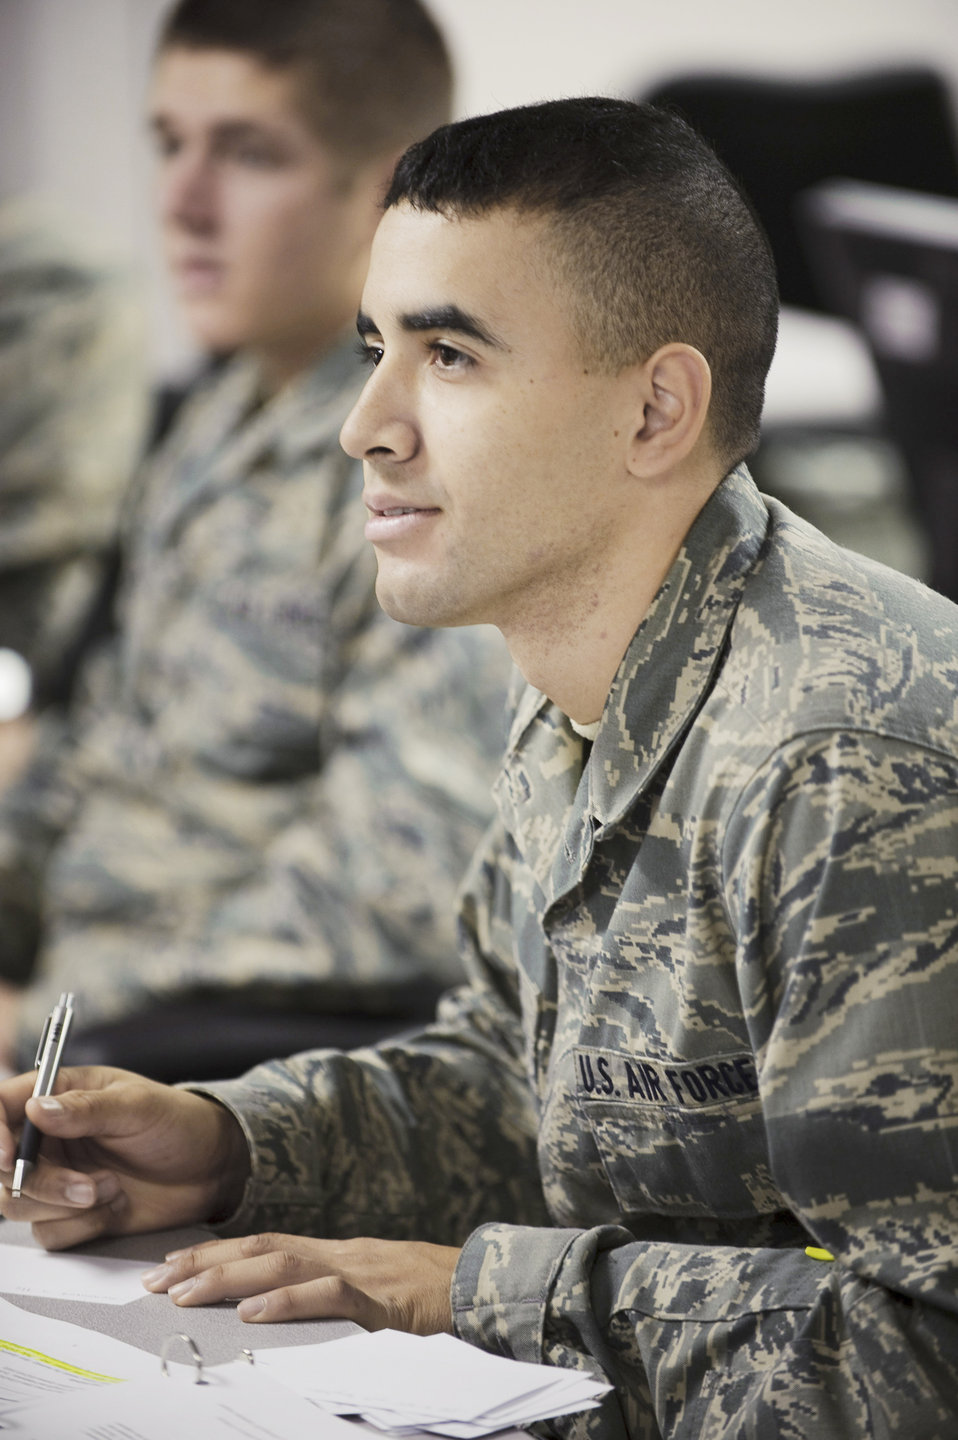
First group of BMT graduates begin sensor operator technical school

Airman Basic Luis Zayas listens during a review of the previous day's lesson on the electromagnetic spectrum during phase one of the Remotely Piloted Aircraft sensor operator training taught by 12th Operations Group, Det. 1, Jan. 19, 2010, at Randolph Air Force Base, Texas. Airman Zayas is a Basic Sensor Operator Course student.